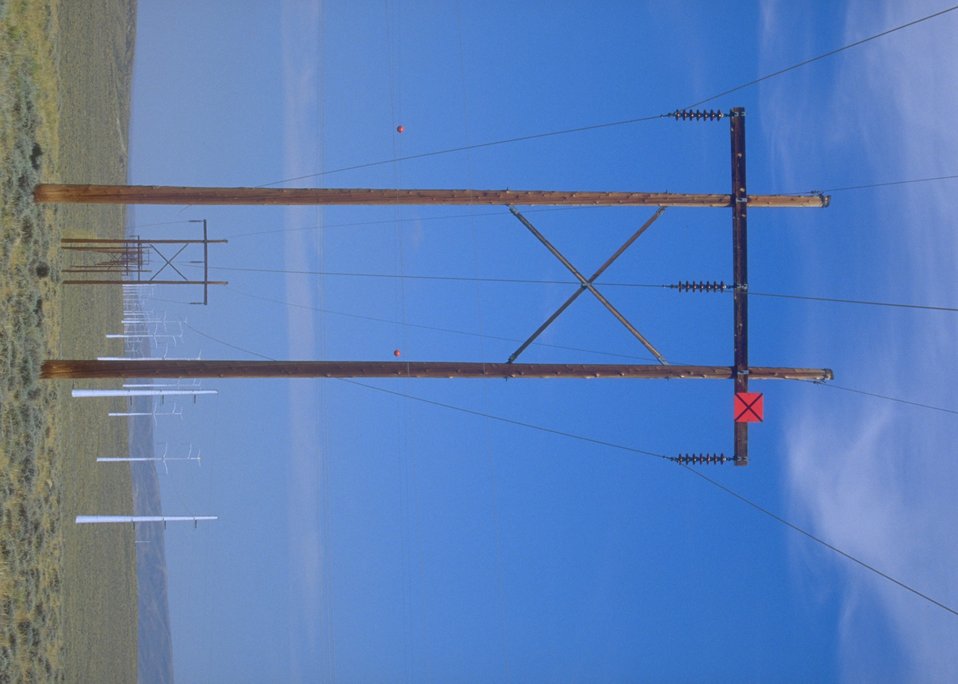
ROW's - Electric power lines along the Oregon Trail west of Casper, WY.